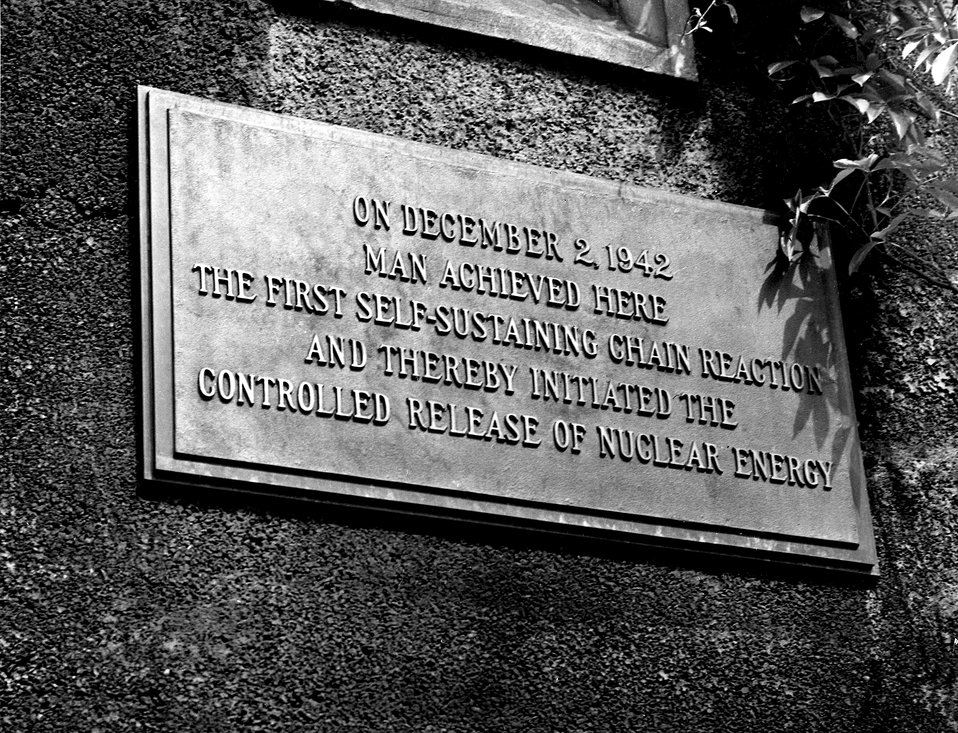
Plaque at Stagg Field, University of Chicago.